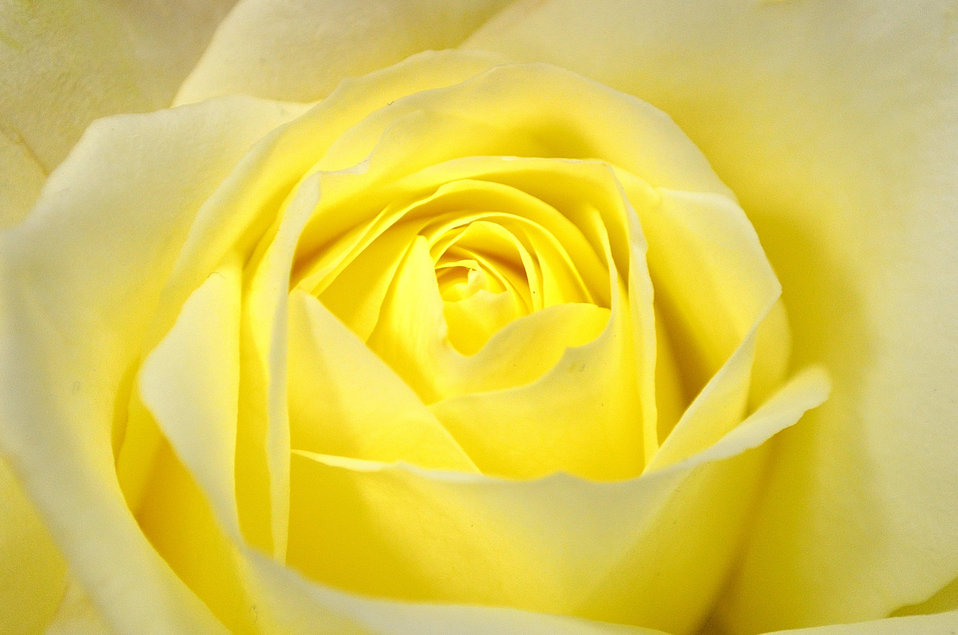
Rose - background.